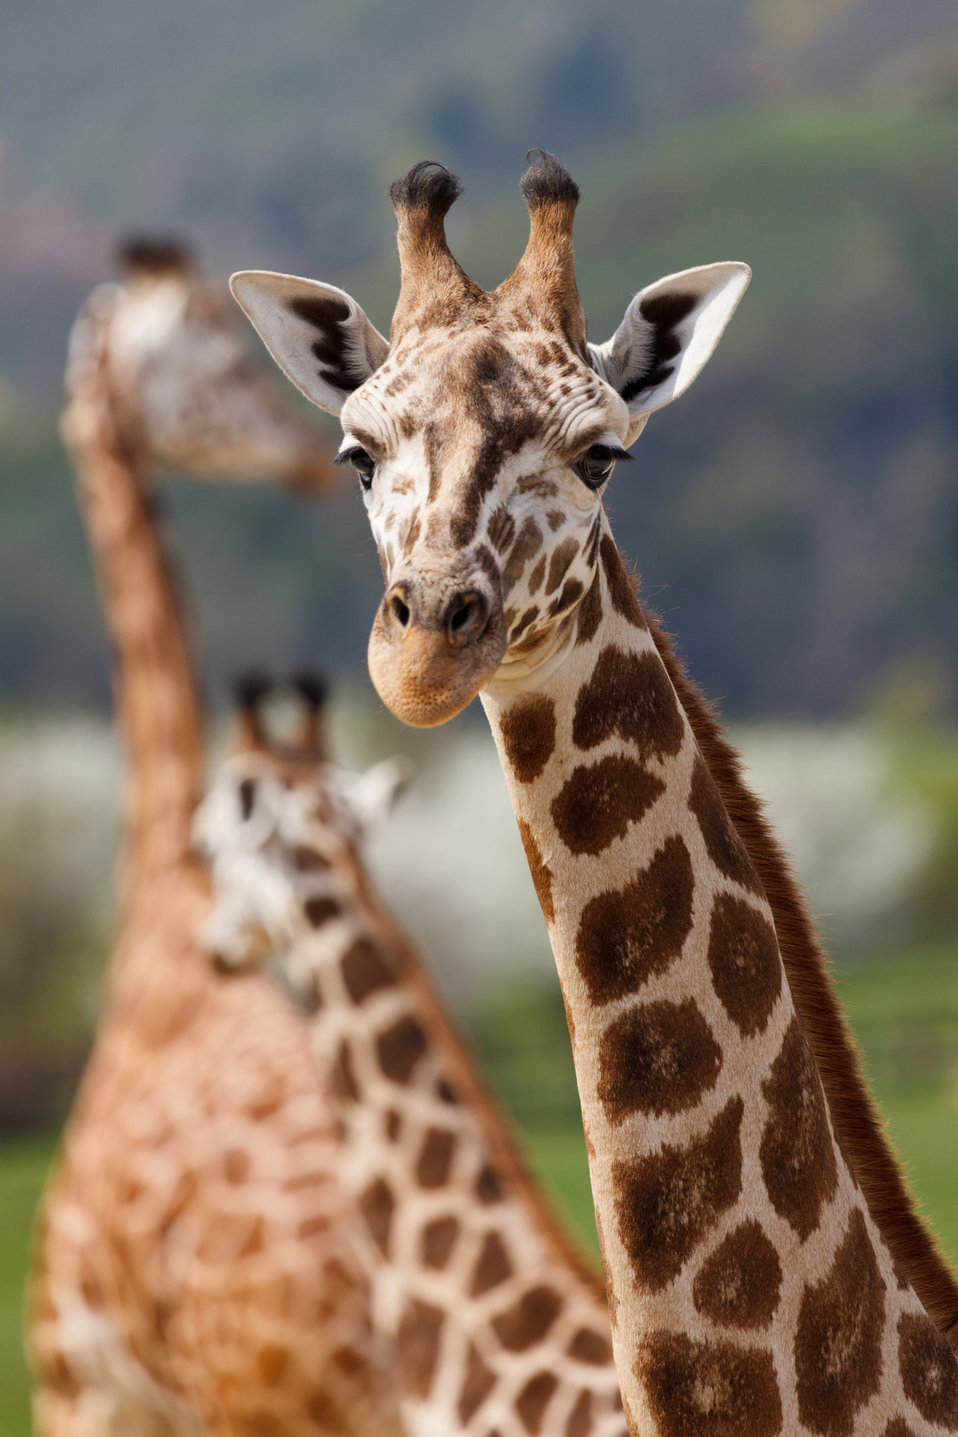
Giraffes outside.